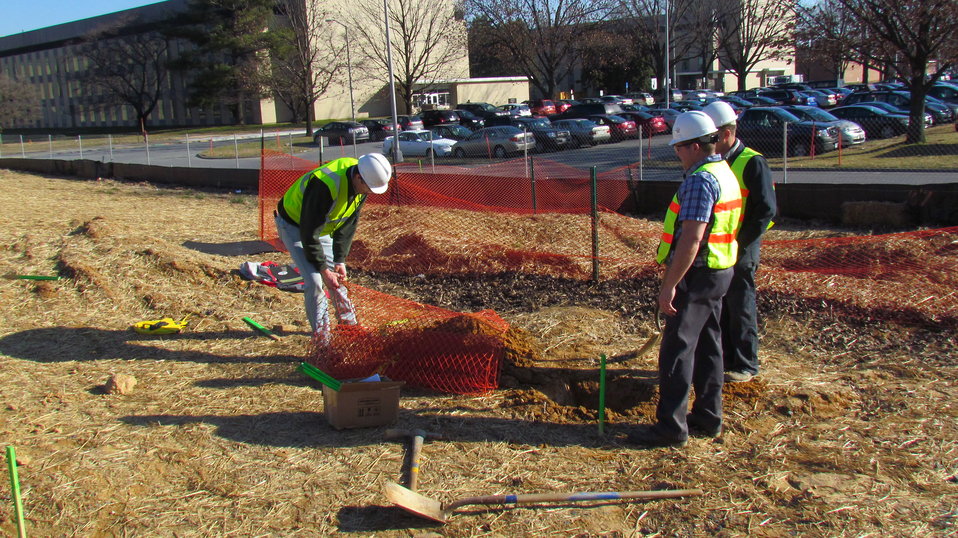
NIST Energy and Environment Division researchers inspecting installation of instrumentation that will be used to monitor performance of earth-coupled loops used for future geothermal heating/cooling systems.